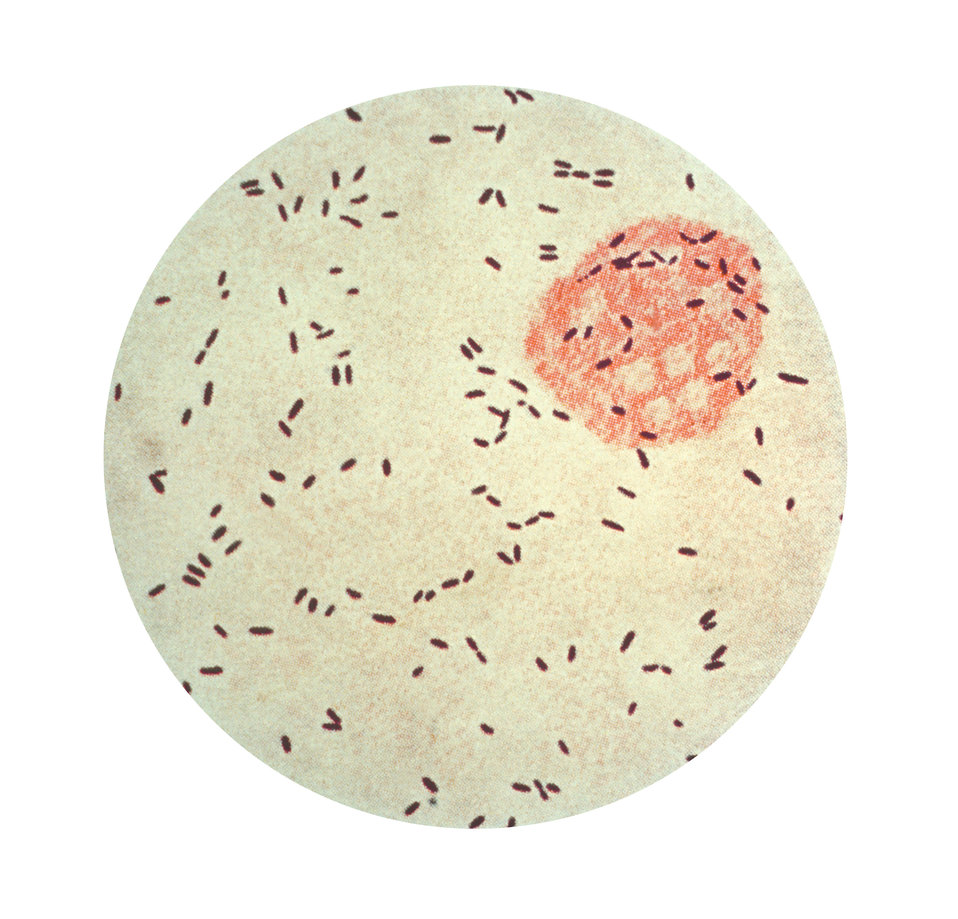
A photomicrograph of Propionibacterium (Corynebacterium) acnes from a facial pustule, using Gram stain technique.